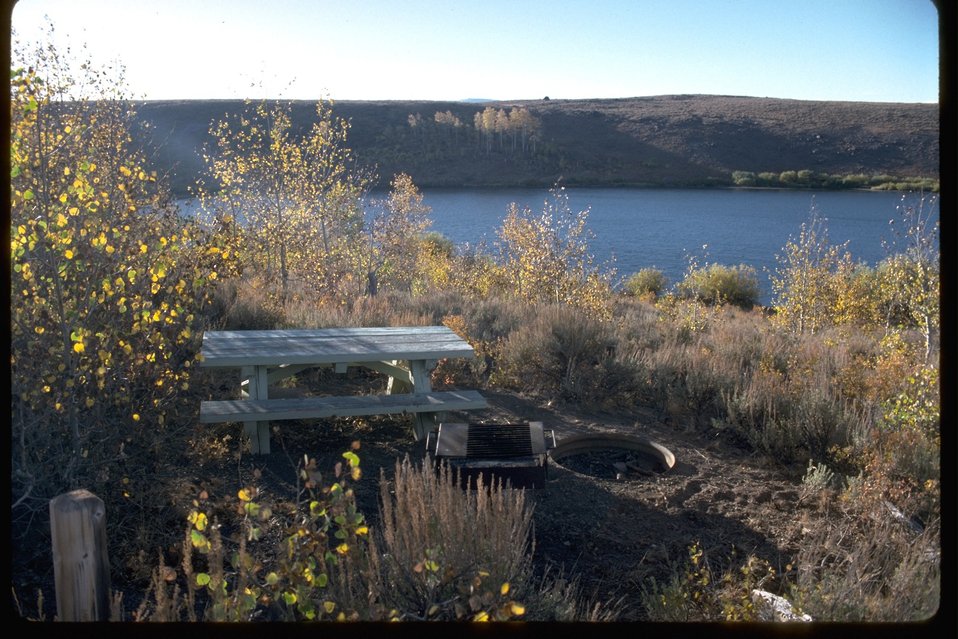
A camping/picnic site at Fish Lake near Steens.